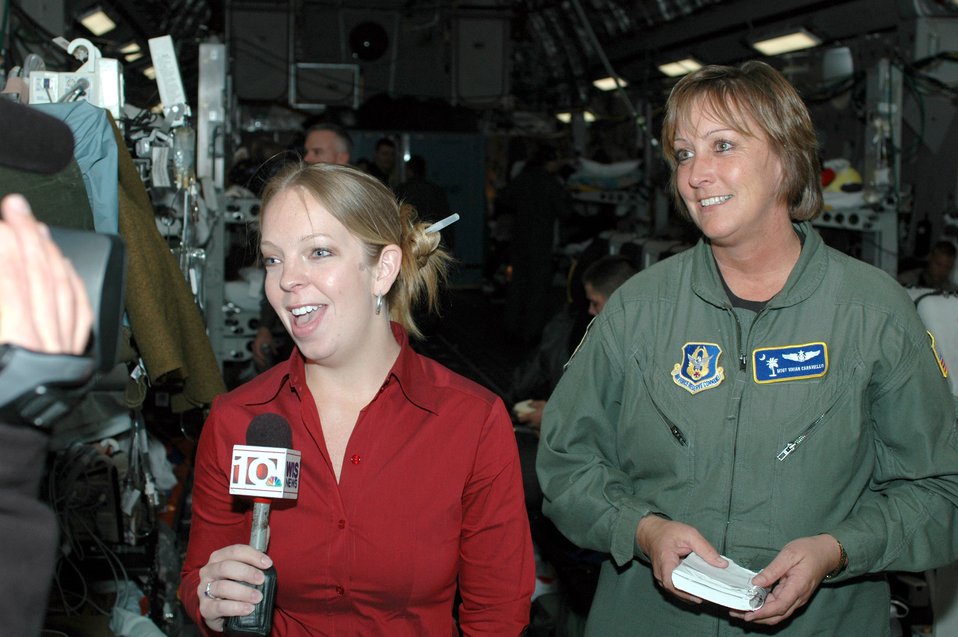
Mother and daughter's worlds collide at 30,000 feet

Stefanie Caraviello (left), the senior producer for WIS-TV in Columbia, S.C., interviews her mother, Master Sgt. Vivian Caraviello, a reservist with the 315th Aeromedical Evacuation Squadron at Charleston Air Force Base, S.C. Both Caraviellos were on a recent aeromedical evacuation mission; the mother caring for patients and the daughter telling the story.